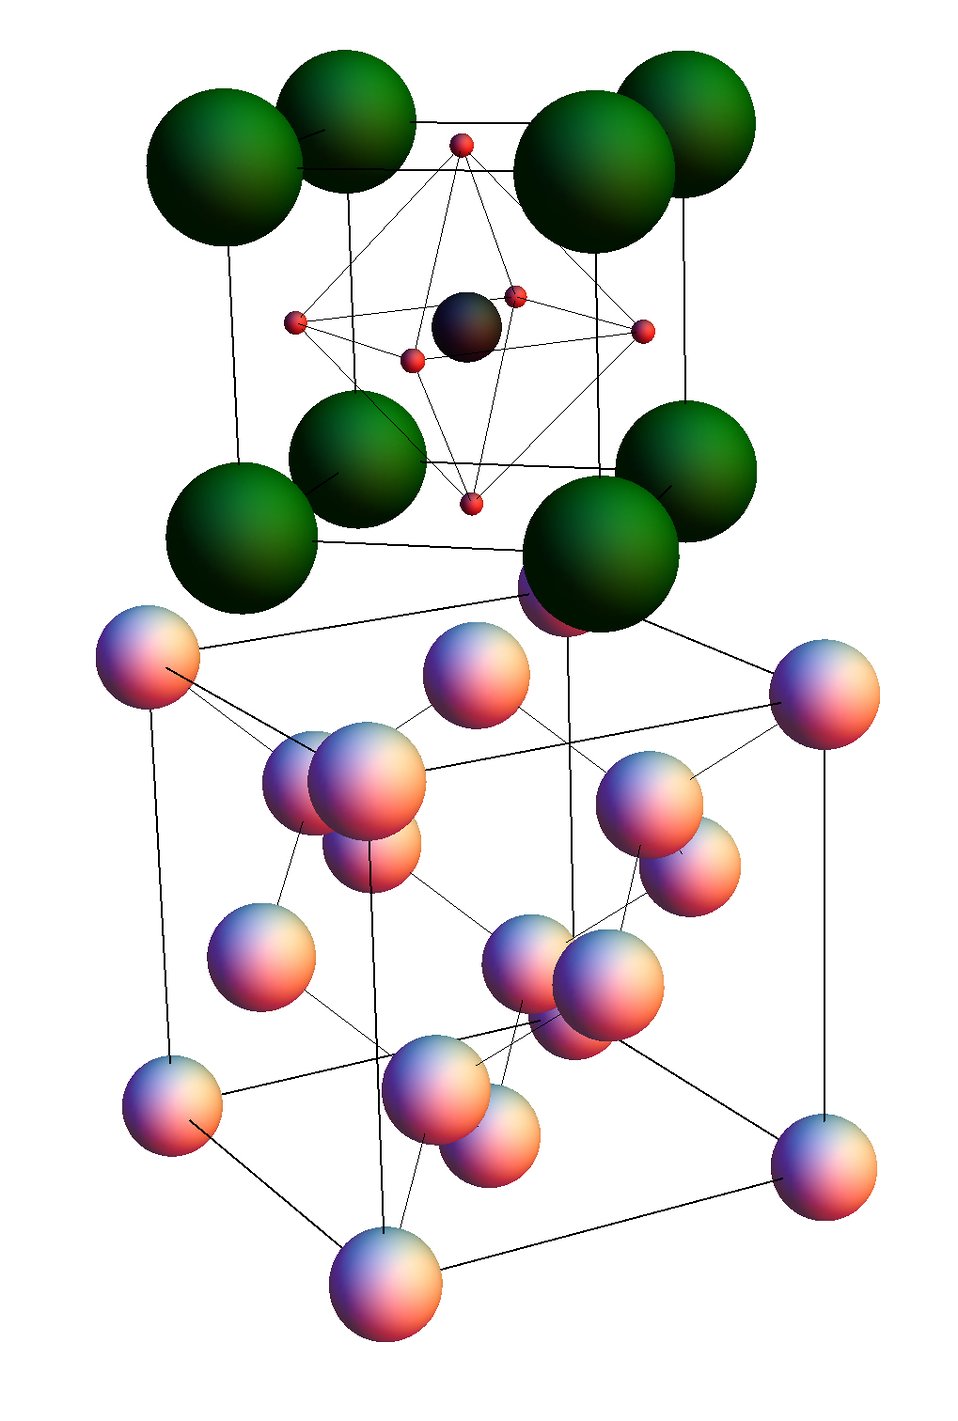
Nanoscale Vise